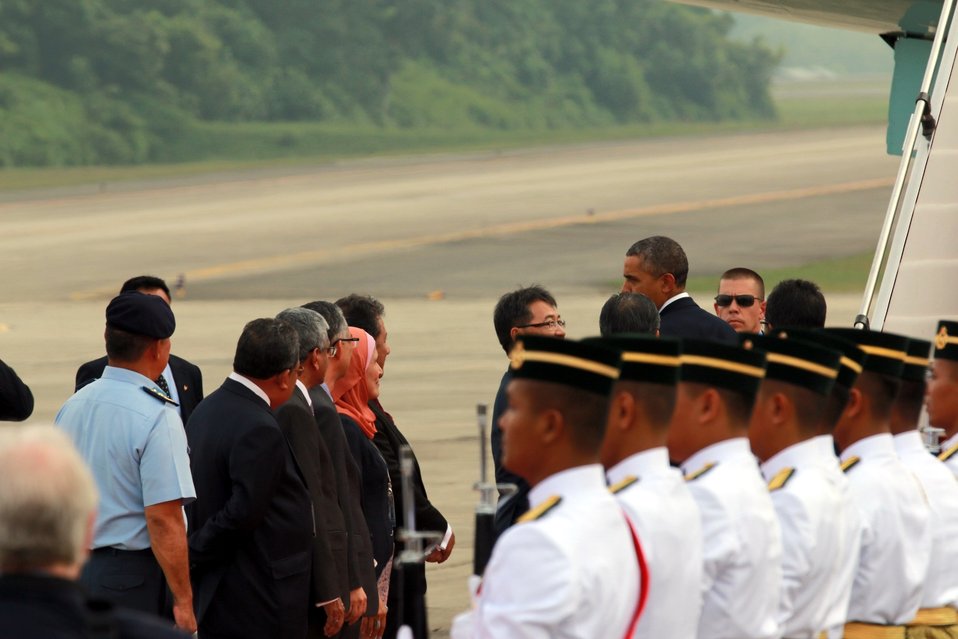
President Obama Prepares to Depart Kuala Lumpur

U.S. President Barack Obama speaks with Malaysian officials before departing Kuala Lumpur, Malaysia, on April 27, 2014.